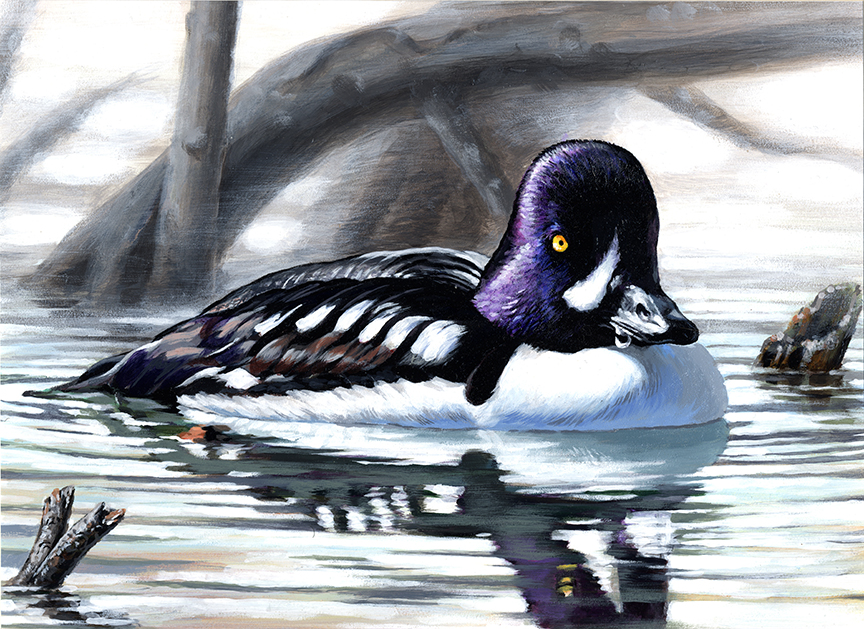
JRDuck2013NY

2013 Junior Duck Stamp Best of Show-New York